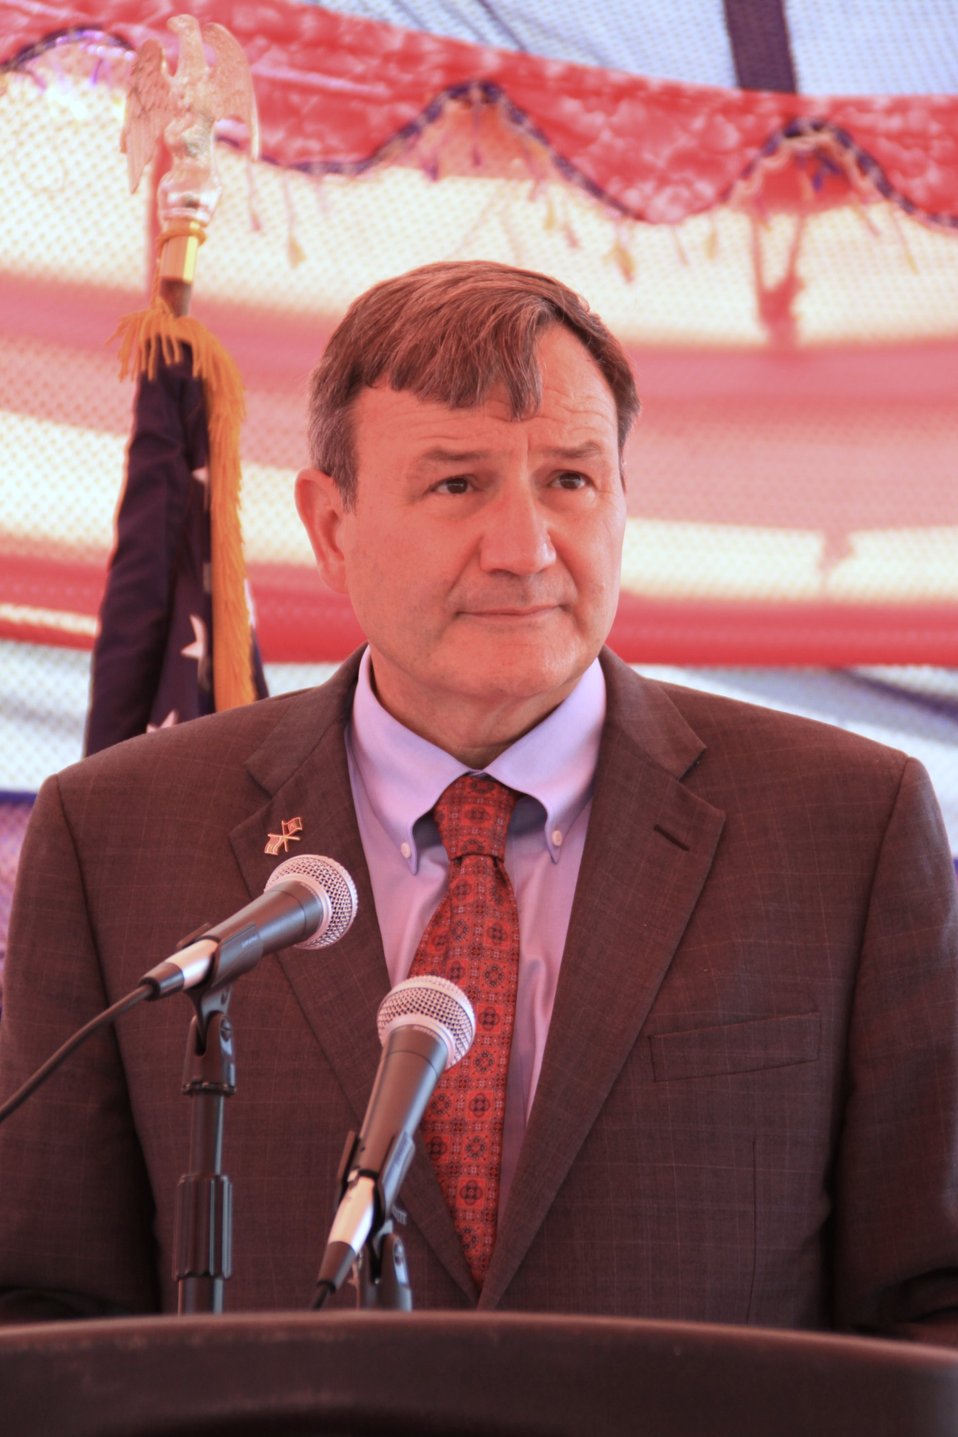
Badam Bagh Farm